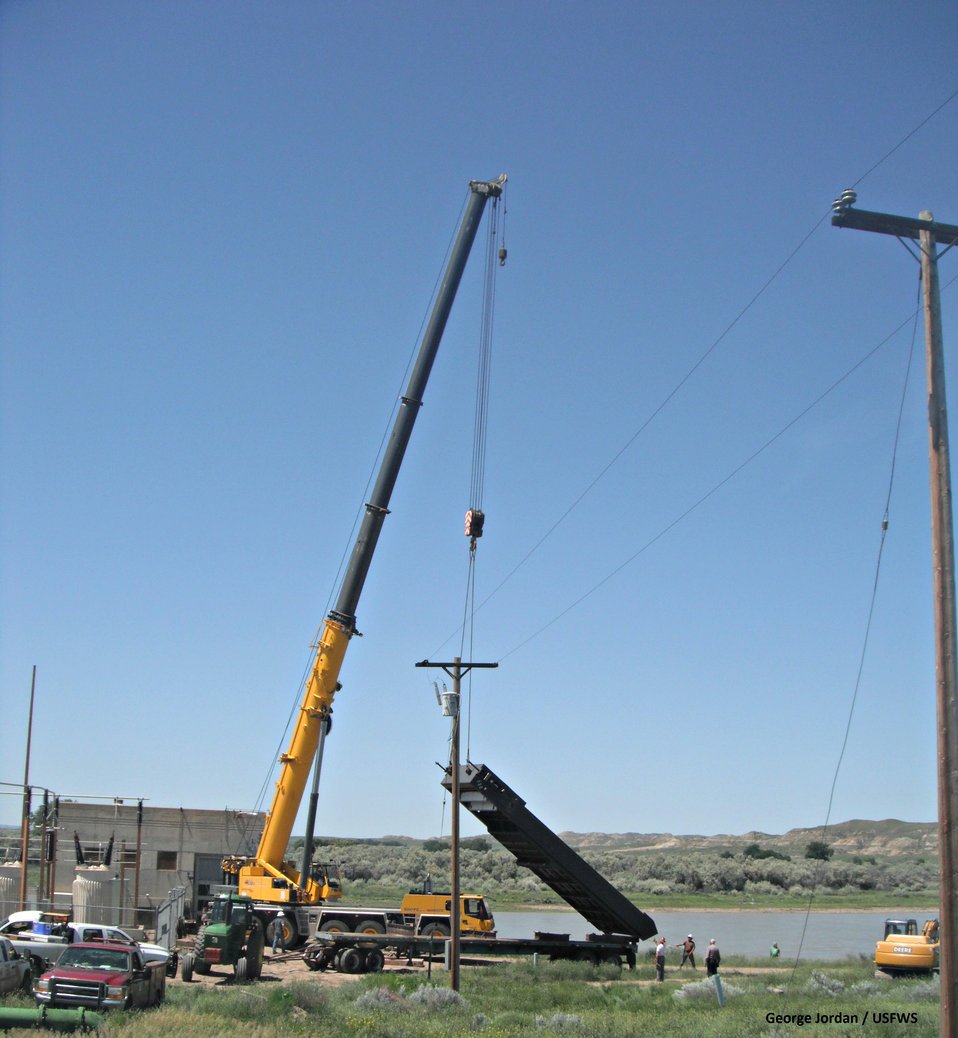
Unloading the first one!

Given the size of these screens, it begged the question: How do we get them from dry ground into the water? We needed to call in the big guns, well, big crane to be precise.